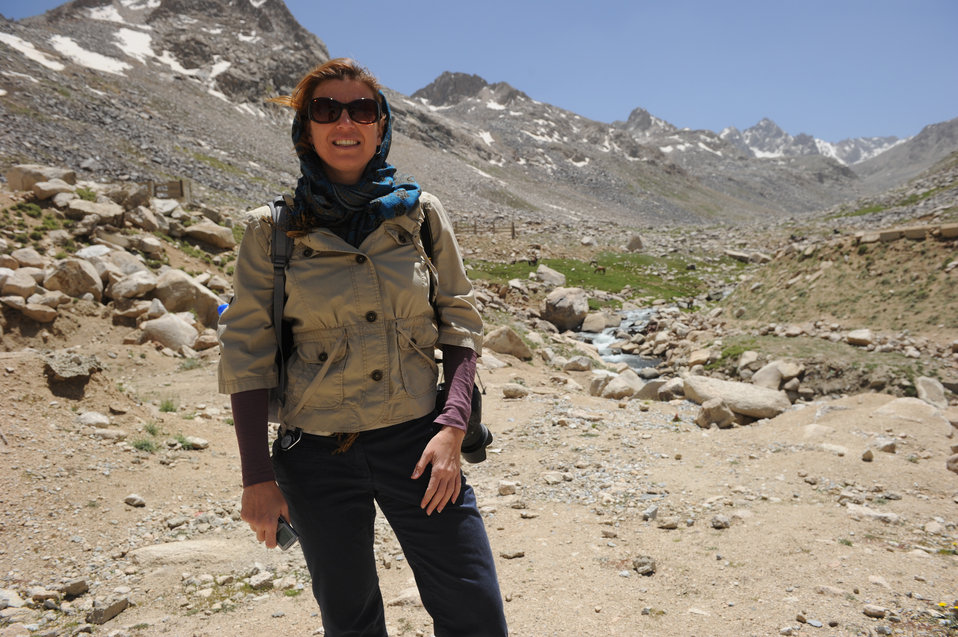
U.S. Ambassador Karl W. Eikenberry attends a ceremony to mark the beginning of renovations at the Salang Tunnel on the border of Parwan and Baghlan Provinces, Afghanistan, on Wednesday, June 15, 2011. (S.K.Vemmer/Department of State)